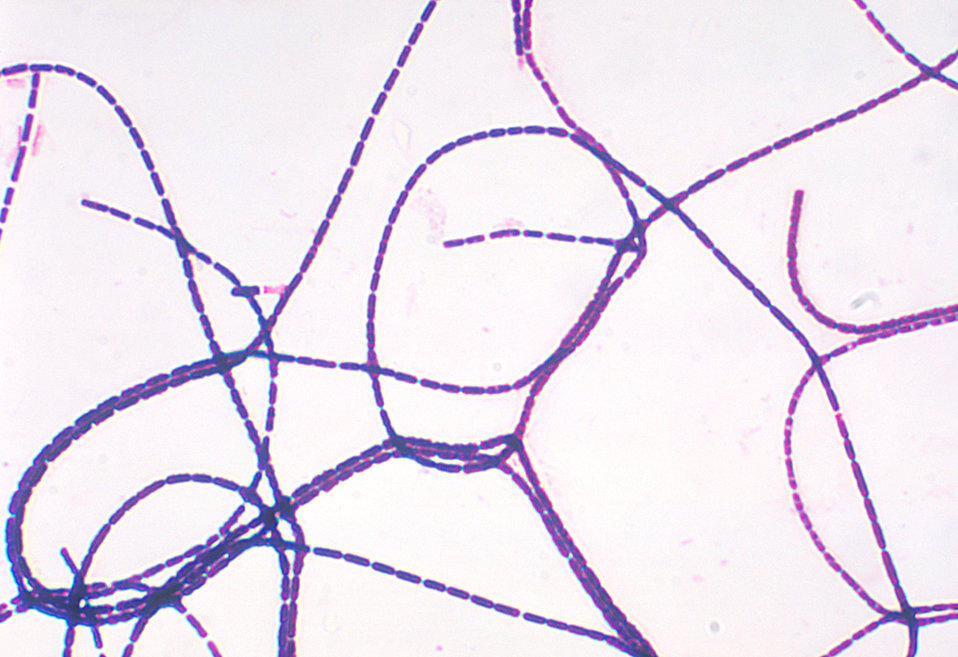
A photomicrograph demonstrating a positive Gram stain with Bacillus anthracis.